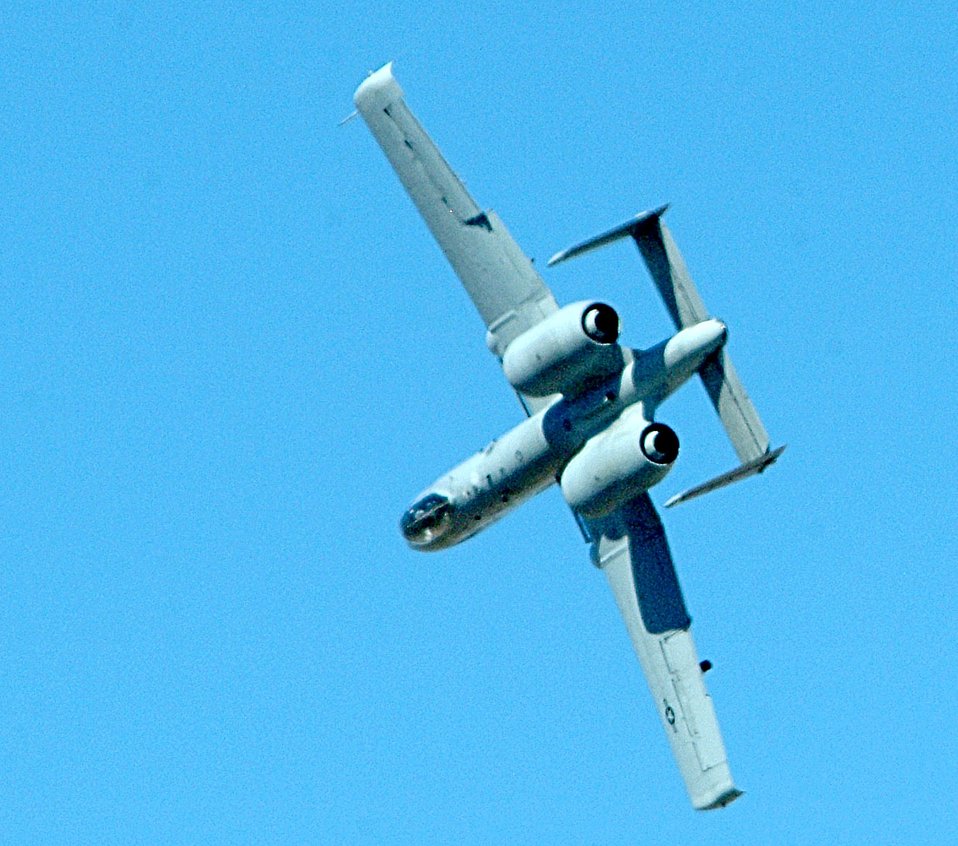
Missouri fighter wing goes to wild, wild west

An Air Force Reserve Command A-10 Thunderbolt II maneuvers over the Barry M. Goldwater Range, Ariz., during live-fire training. Reservists from the 442nd Fighter Wing deployed to Arizona from Whiteman AFB, Mo., to practice employing live munitions.